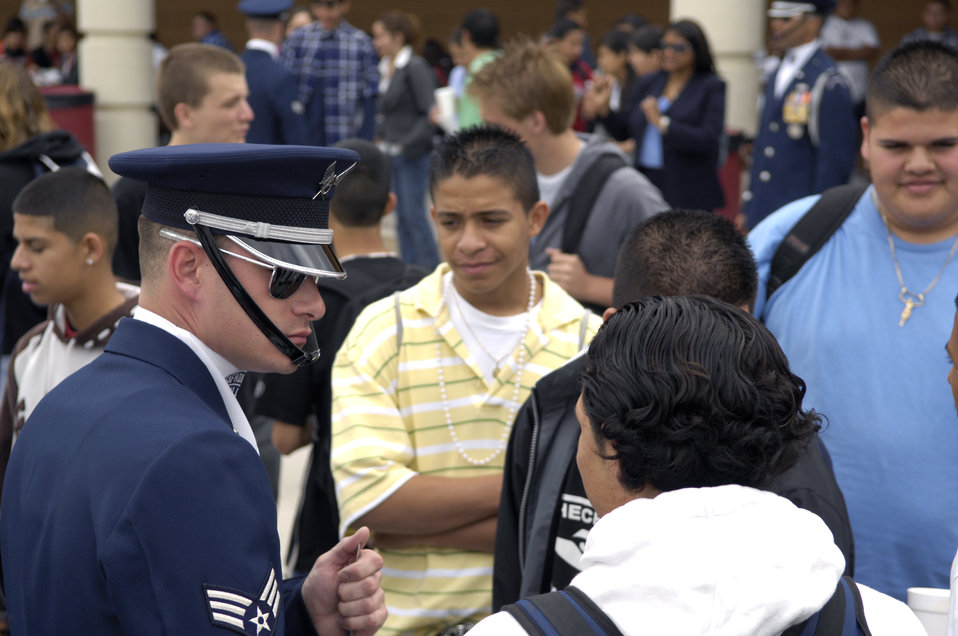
Showcasing the Air Force mission

Senior Airman Adam Clonick, of the United States Air Force Honor Guard Drill Team, speaks with students March 23 after the team's performance at Dysart High School in El Mirage, Ariz. The drill team is the traveling component of the Air Force Honor Guard and tours Air Force bases worldwide showcasing the precision of today's Air Force to recruit, retain and inspire Airmen for the Air Force mission.